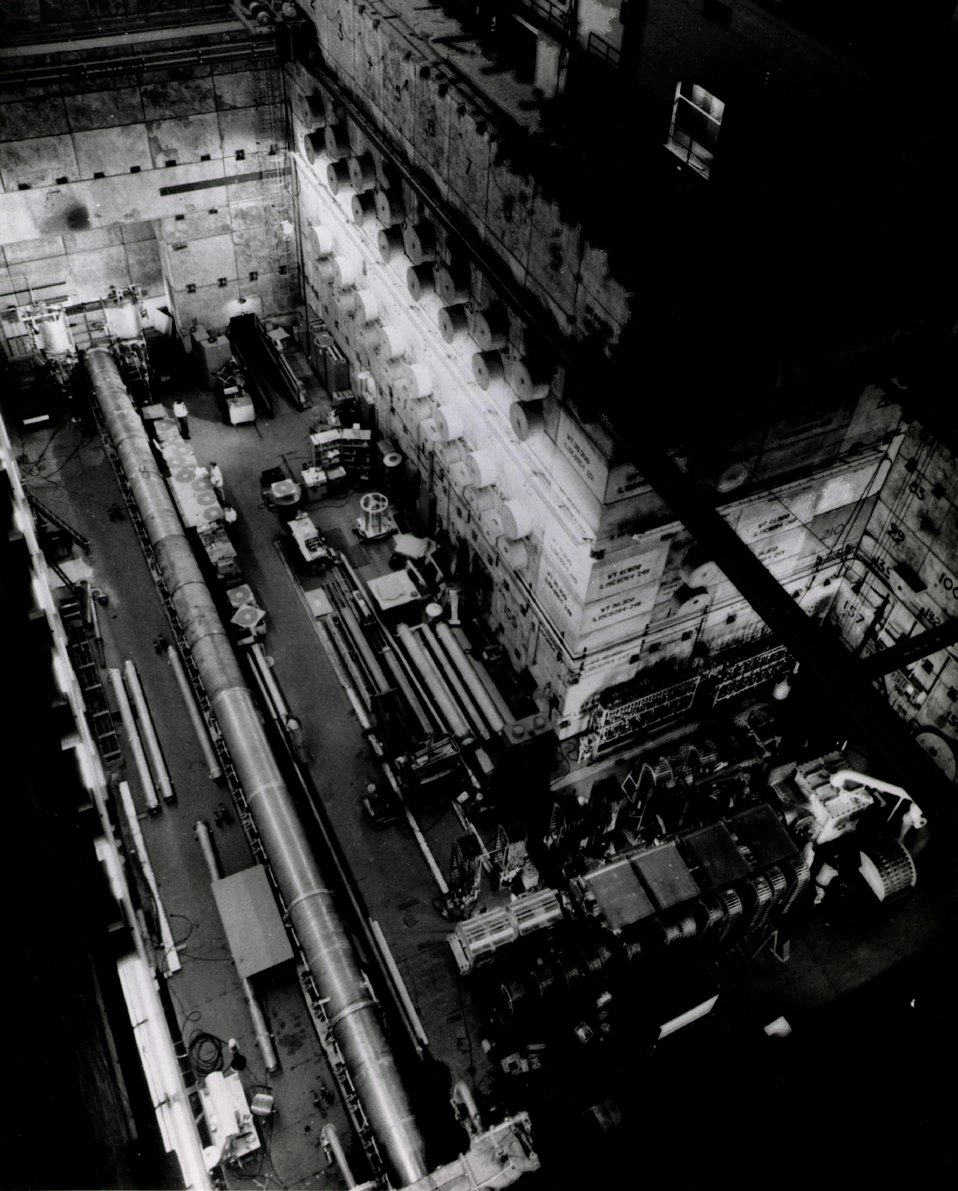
View from above of the Astron which is operated for the Atomic Energy Commission. Astron is one of the machines being developed in a program of experiment in the AEC's Project Sherwood. Circa 1962.